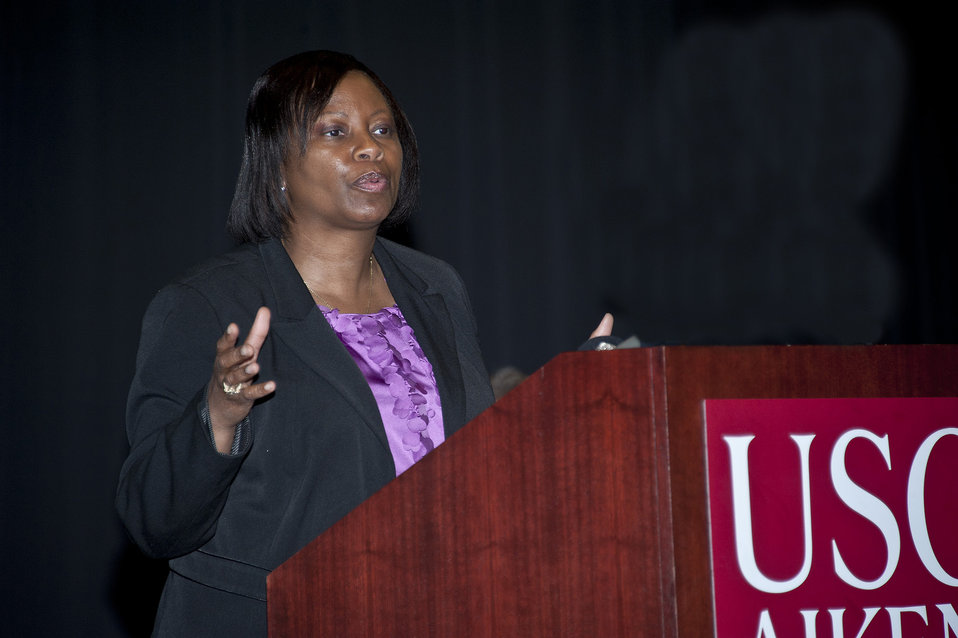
SRS Economic Impact Study

EM Chief Operations Officer Cynthia Anderson speaks at the unveiling of a study detailing the Recovery Act’s economic impact in the region surrounding SRS.

***

A study shows the $1.6 billion the Savannah River Site (SRS) received from the American Recovery and Reinvestment Act has had a positive economic impact on the adjacent five-county region.

A team of economists from local universities conducted the study in five South Carolina and Georgia counties from April 2009 to October 2010.